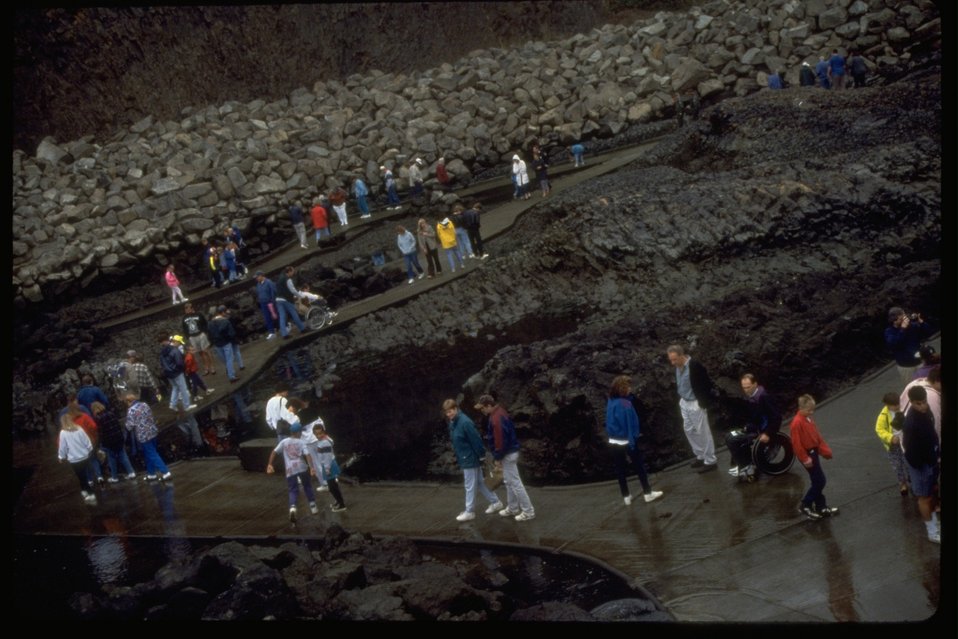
Accessible tidepools at Quarry Cove at Yaquina Head Outstanding Natural Area.